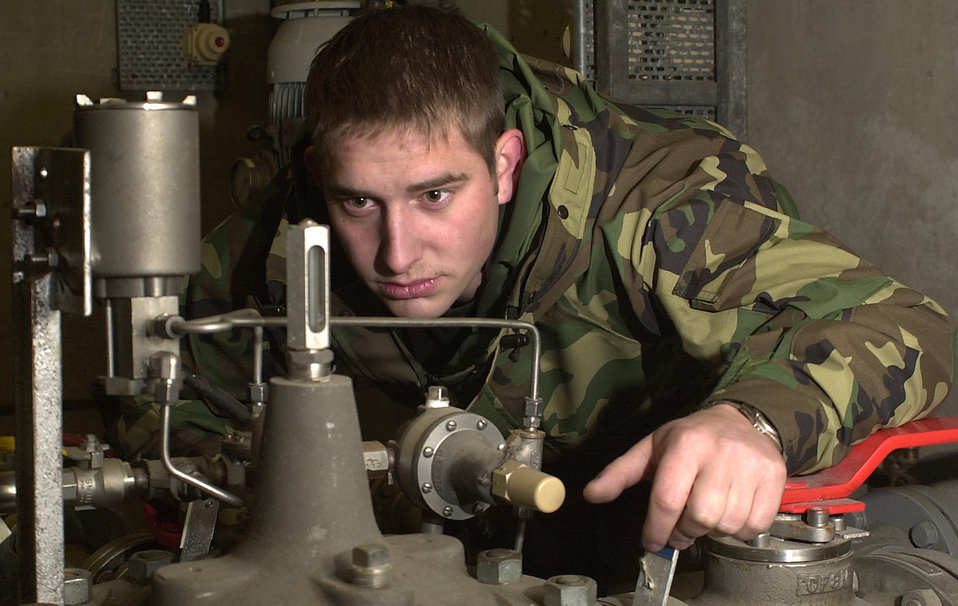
Keeping fuel flowing

ROYAL AIR FORCE MILDENHALL, England -- Senior Airman Johnathan Seifert inspects a gauge that indicates the operational status of the fuel system. Seifert is assigned to the 100th Logistics Readiness Squadron's fuels management flight here. The flight provides nearly 33 million gallons of fuel annually to the 100th Air Refueling Wing's KC-135 Stratotankers, 352nd Special Operations Group aircraft and transient aircraft that visit the base.